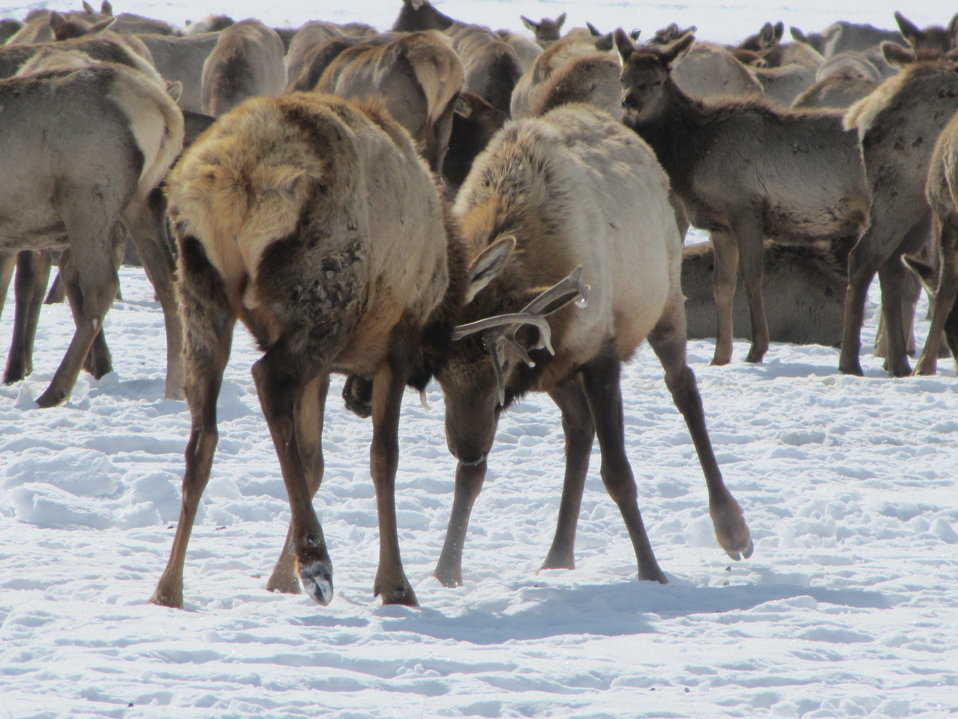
Another Sparring Pair

Though bulls most actively display dominance during the fall rut, they can frequently be seen clashing antlers with rival males during the winter. The distinct clacking sound can be heard by anyone near the wintering animals.